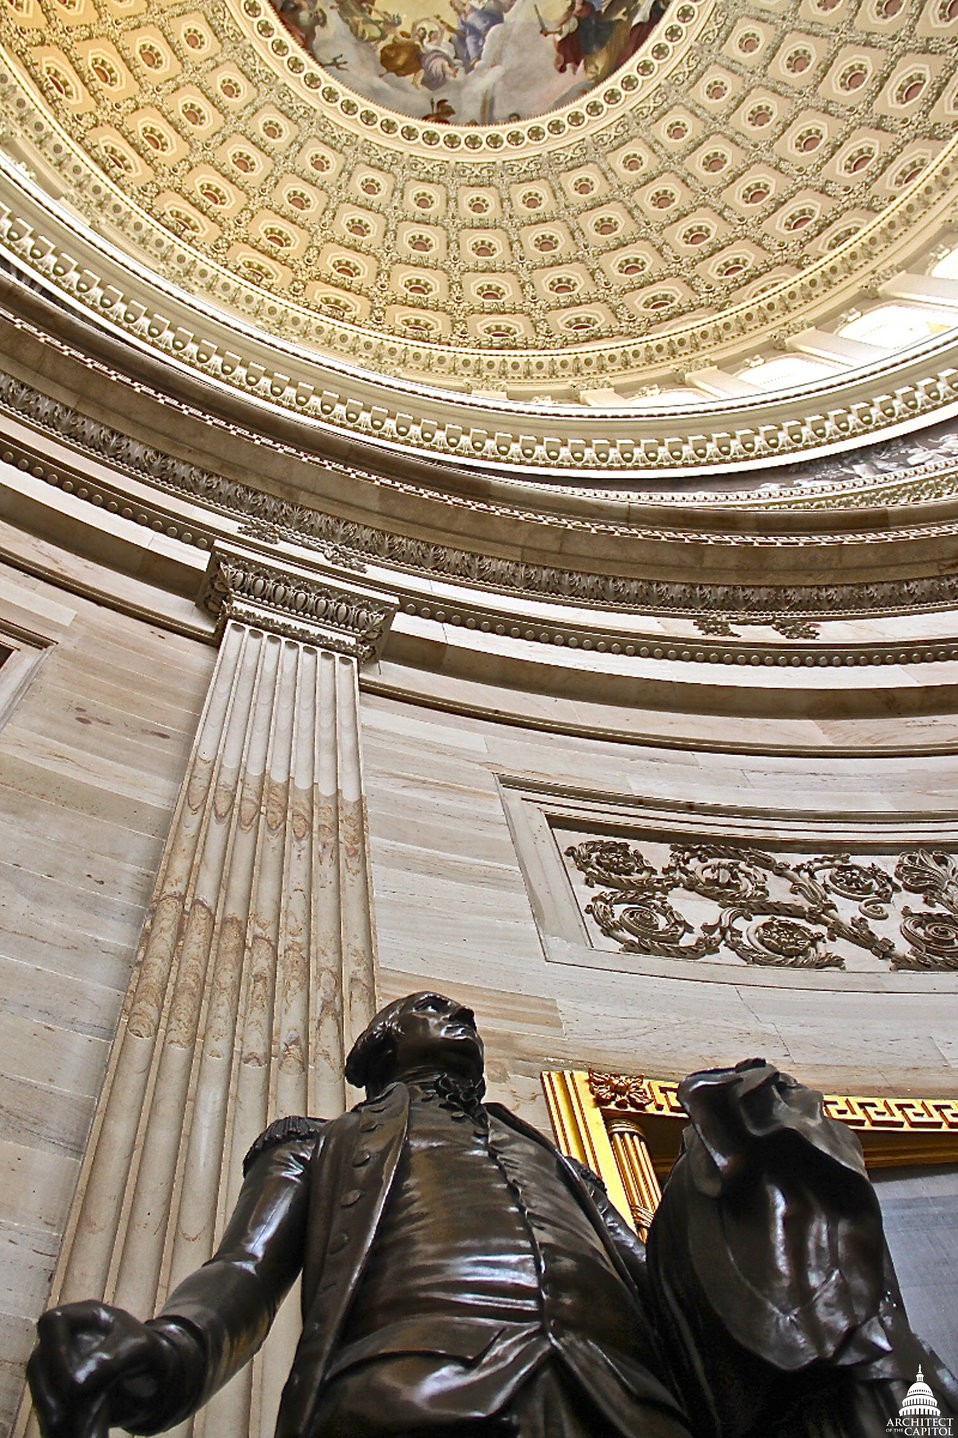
George Washington in Rotunda

First US presidential election was held January 7, 1789. Washington won the election with 100% of the electoral votes.